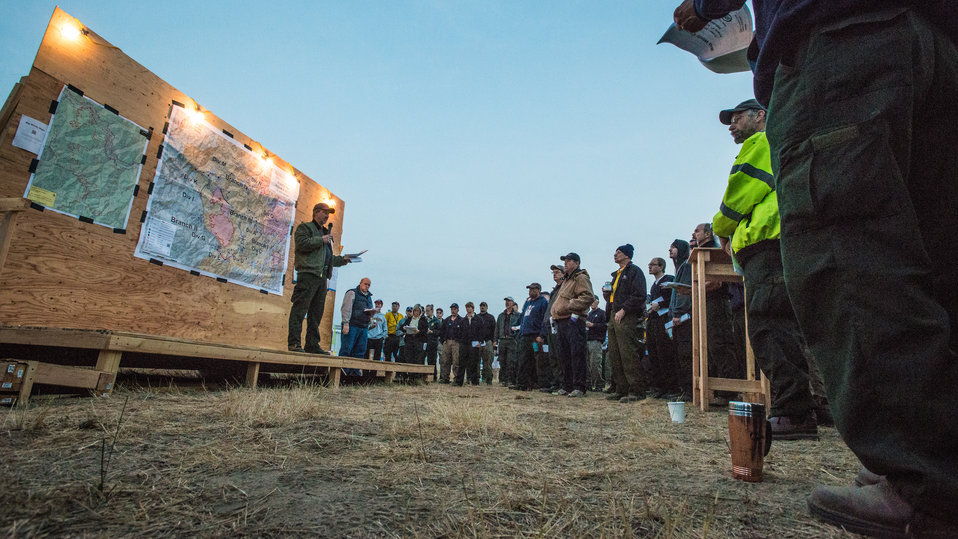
The Morning Briefing at the Big Windy Complex Wildlands Fire, Incident Command Post (ICP) in Merlin, OR on Friday, Aug 9, 2013. Several presenters taking turns, bringing people up to speed on the nights activates and what the objectives are for today. The fire center is approximately 15 miles west of Interstate-5 and East Northeast of Galice, Oregon.